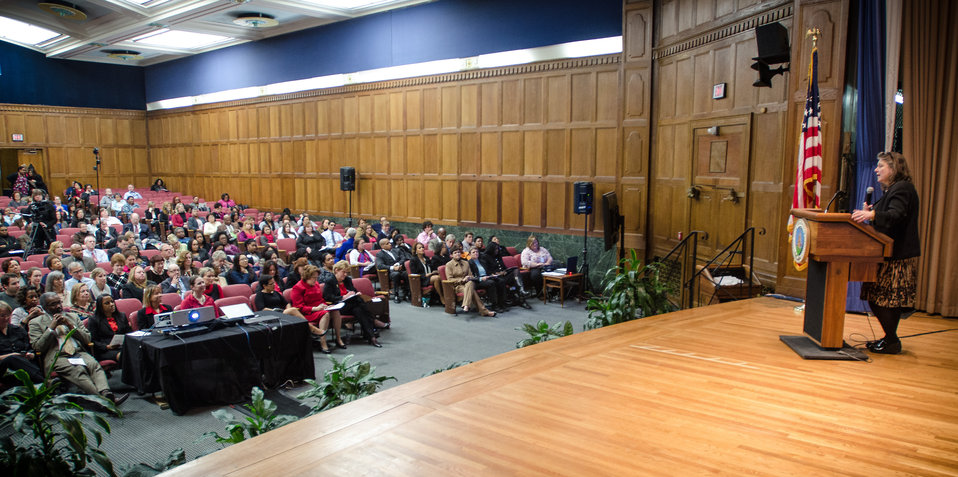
U.S. Department of Agriculture (USDA) Deputy Secretary Kathleen Merrigan, Ph.D., makes opening remarks, during the “Women Inspiring Innovation Through Imagination: Celebrating Women in Science, Technology, Engineering, and Mathematics” event, onThursday, March 21, 2013, in Washington, D.C.